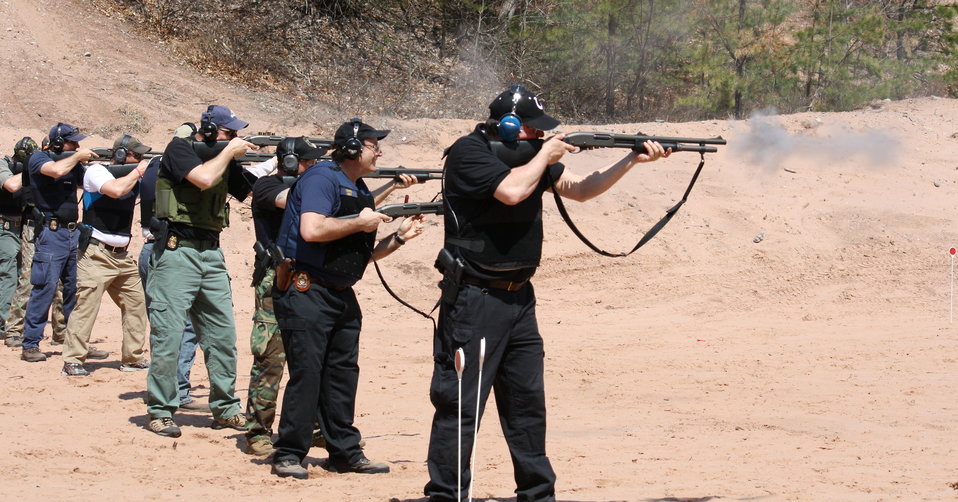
Agents Firing Shotguns

Law Enforcement target practice at outdoor shooting range in Glastonbury, CT.